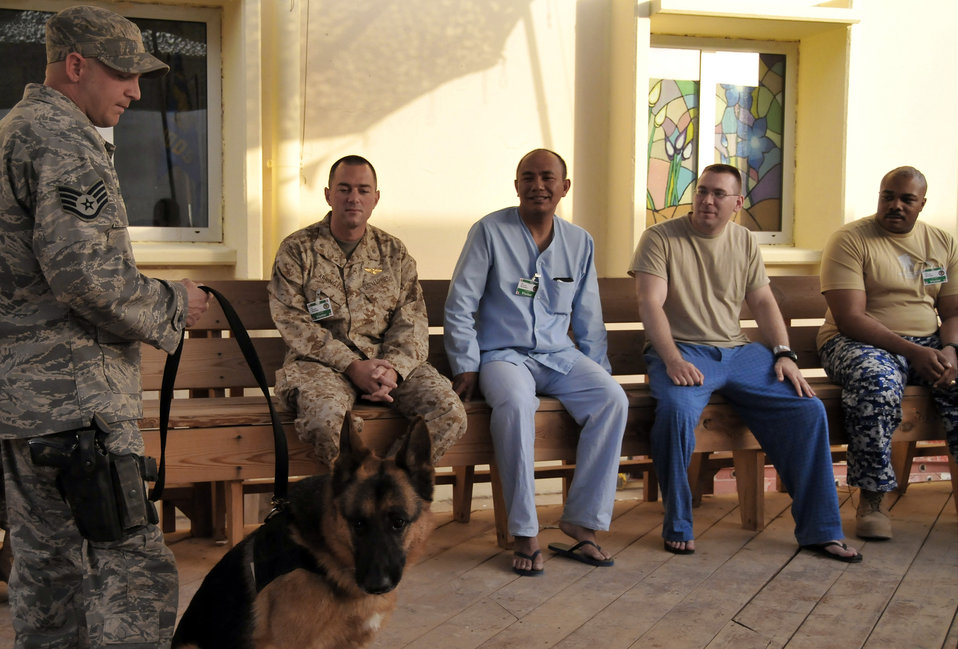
Airmen 'unleash' new recovery program for patients

Staff Sgt. Charles Busha introduces his narcotics detector dog, Golf, to patients at the Air Force Theater Hospital as part of the newly created K-9 Visitation Program May 15 at Joint Base Balad, Iraq. Sergeant Busha is a 332nd Expeditionary Security Forces Group K-9 handler. He and his dog are deployed from Fairchild Air Force Base, Wash. Sergeant Busha is a native of Lake Jackson, Texas.